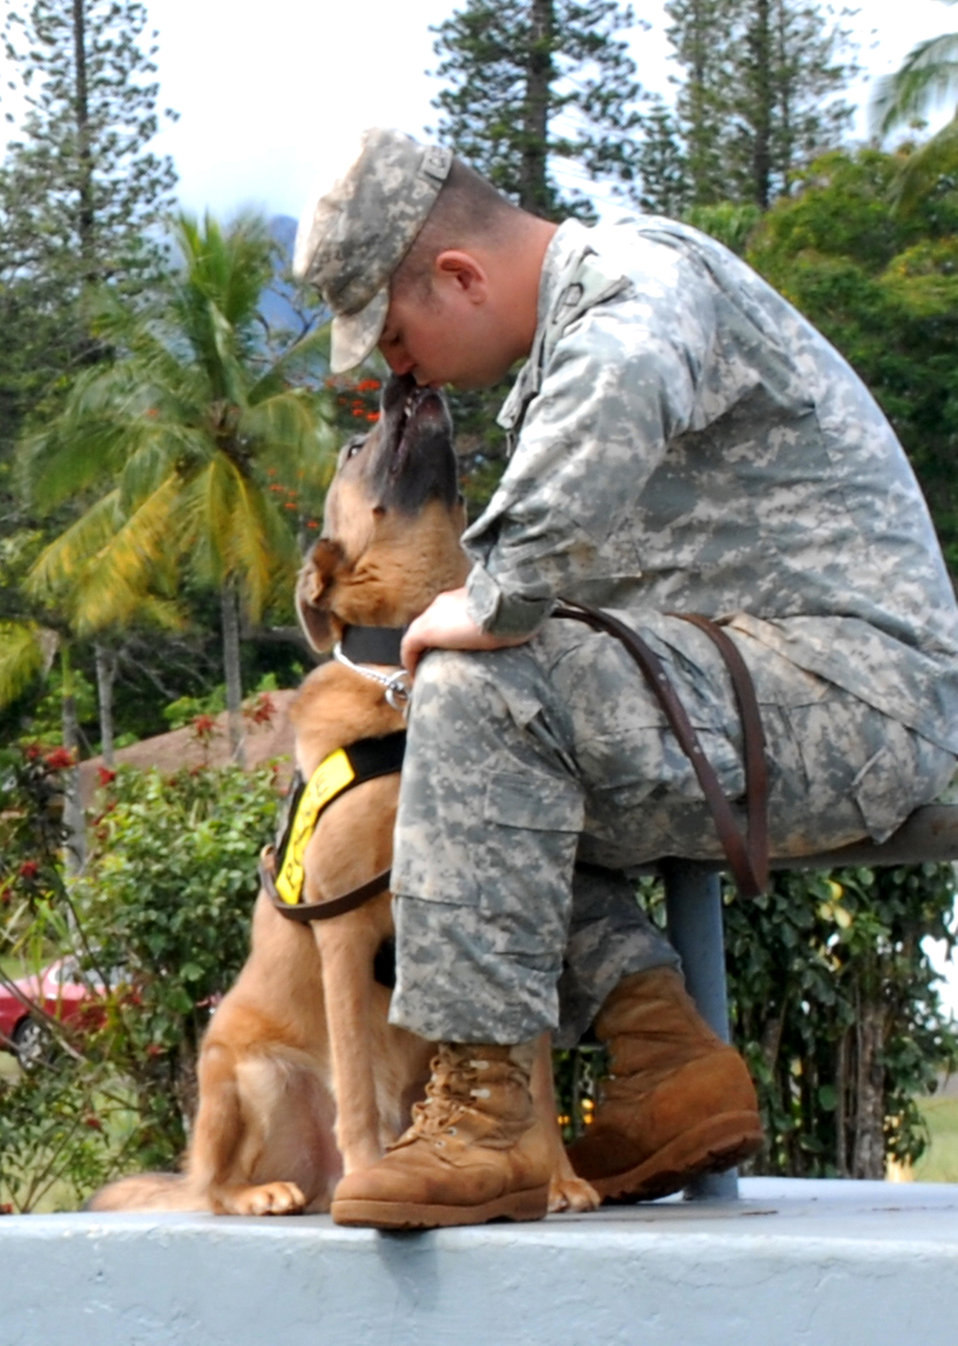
Working dog competition

Army Sergeant Noah Carpenter and his military working dog Bo enjoy a quiet moment between events of the 2010 Hawaiian Islands Working Dog Competition Nov. 19, 2010, at Schofield Barracks, Hawaii. Sergeant Carpenter and Bo are assigned to the 13th Military Police Detachment at Schofield Barracks.